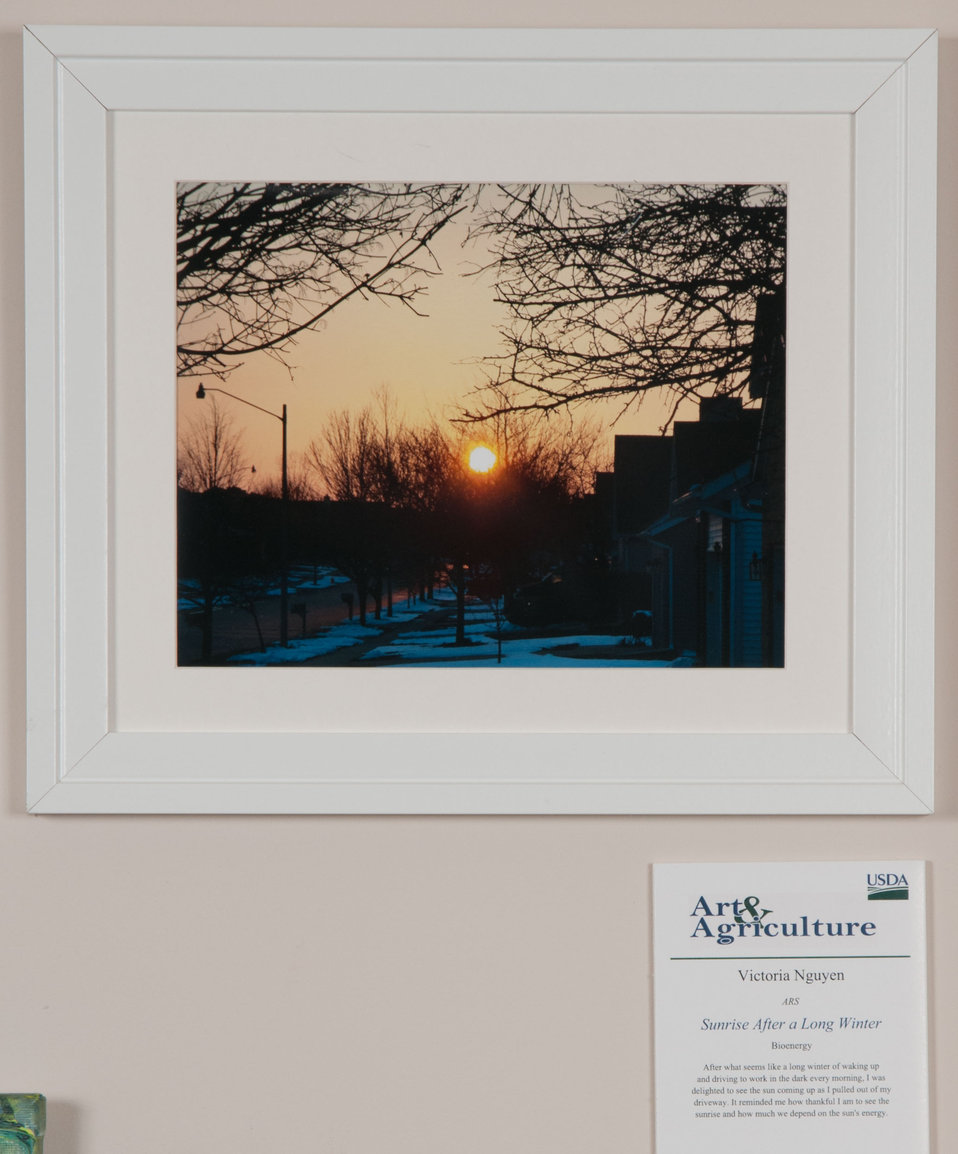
Online Viewer's Choice entries of the 2013 Art & Agriculture, Tuesday, July 9, 2013, in the South Building, Washington, D.C. Themes were expressed by employees from across the department and the contest was open to full-time and part-time USDA employees. Winning artwork will be displayed till the end of the year. U.S. Artistic expression is a creative outlet that is vital for an individual to grow and develop.